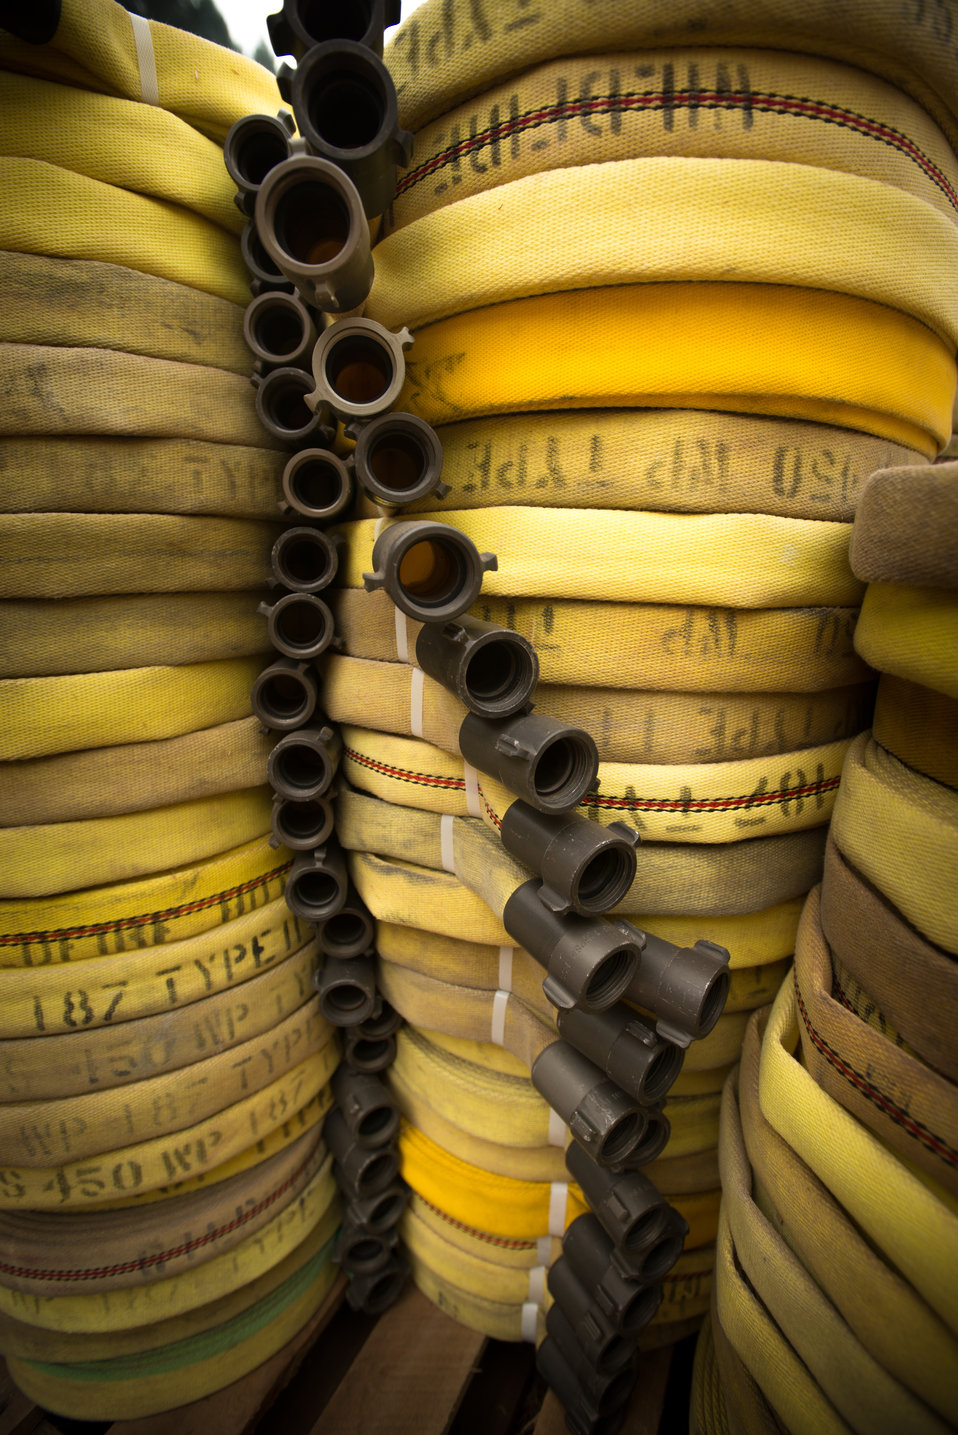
Serviceable hand lines (fire hose) available for firefighters at the Salmon River Complex Fire burning northwest of Sawyers Bar and west of Etna and Yreka, CA in the Klamath National Forest, on Tuesday, Aug. 6, 2013. It is vital that when a firefighter needs fire resistant clothing, a Mccloud Tool, Pulaski Axe, Combi Tool, pumps, connectors and hoses to draw water from a portable reservoirs to pressurize hand line (fire hoses), they go to this centralized point to get readily available item for issue or replacement as needed. These supplies have been shipped from the National Interagency Supply Cache System depots and/or other caches to this and other fires across the nation.